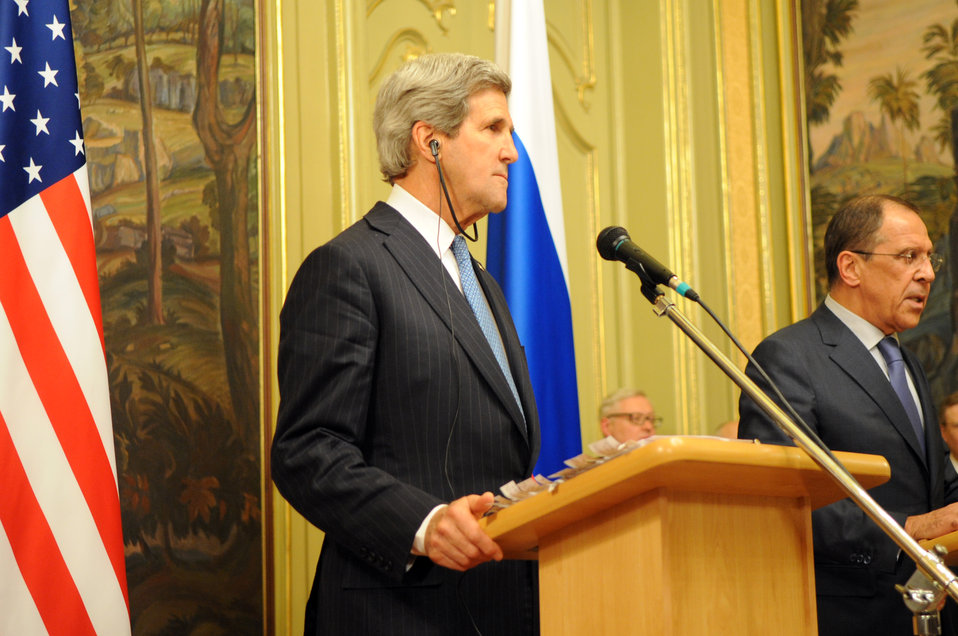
Secretary Kerry and Russian Foreign Minister Lavrov Address Reporters

U.S. Secretary of State John Kerry and Russian Foreign Minister Sergey Lavrov address reporters after their bilateral meeting at the Russian Ministry of Foreign Affairs' Guesthouse Osobnyak in Moscow, Russia, May 7, 2013.